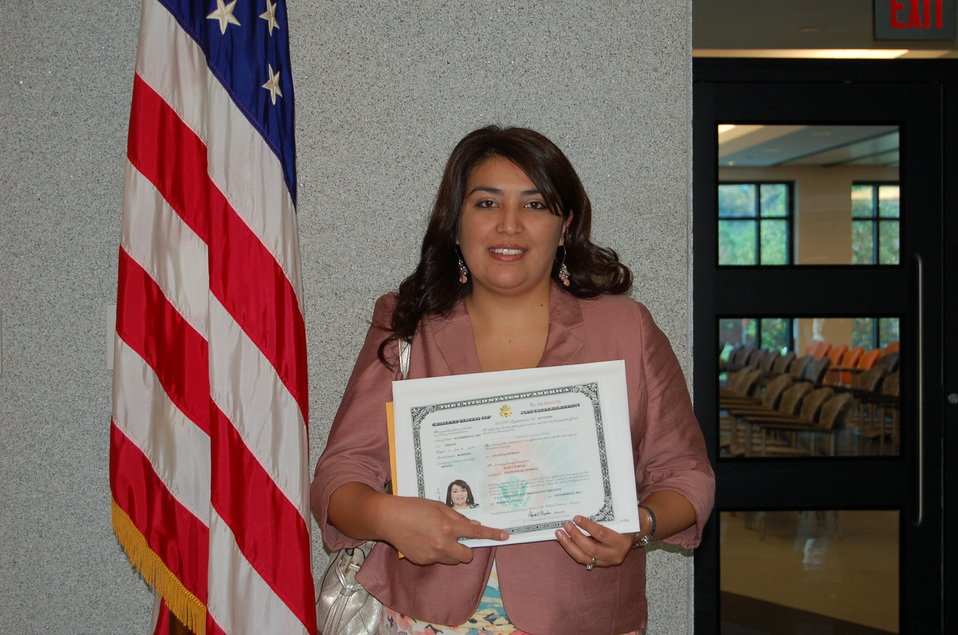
New Citizens